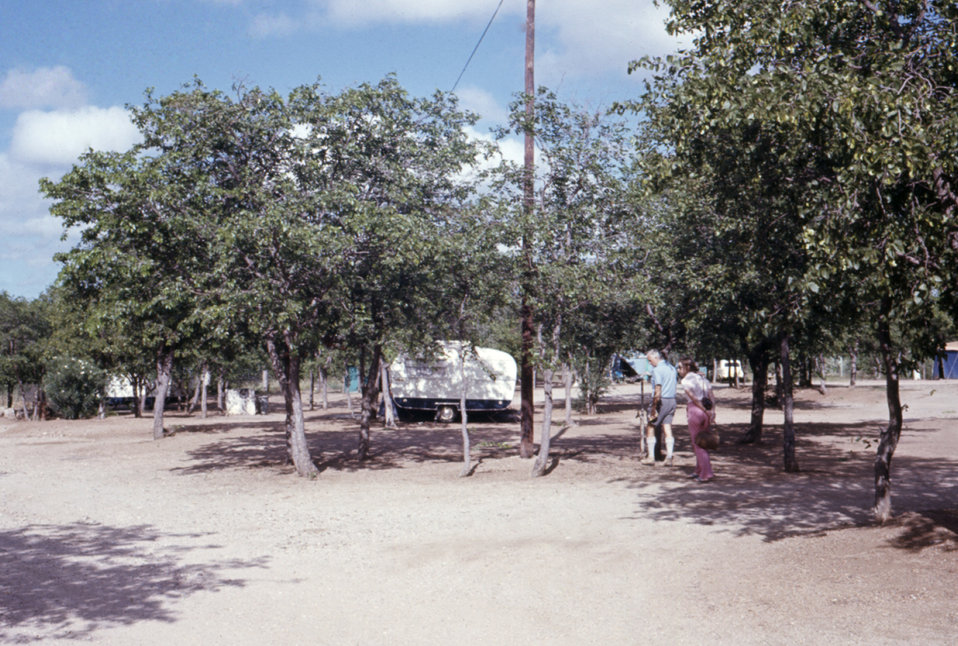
These two health officials were walking through a Beitbridge, Rhodesian campground during the Marburg investigation of 1975.